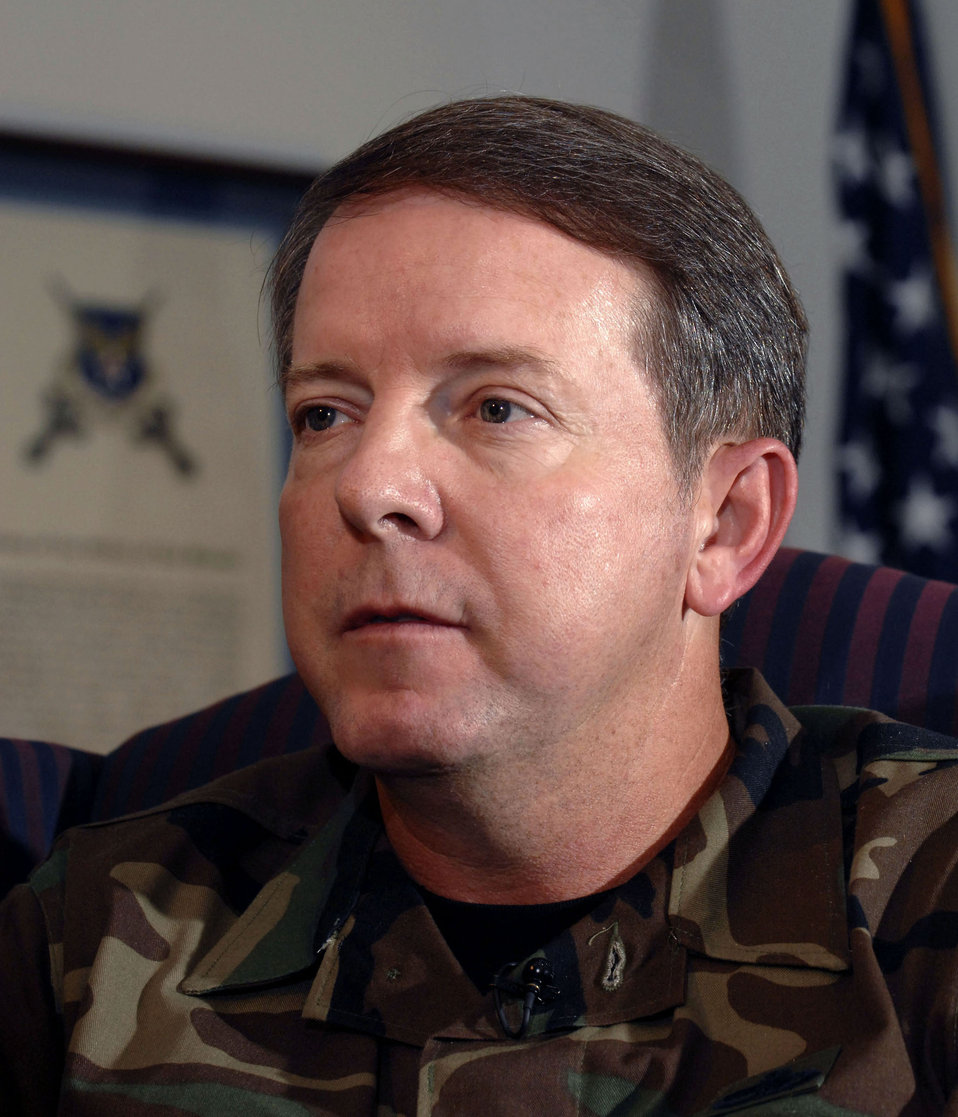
Chief's View highlights conduct

Chief Master Sgt. of the Air Force Rodney J. McKinley reminds Airmen that they are a reflection on the service 24 hours a day, 7 days a week and serve as ambassadors for the Air Force, both on and off duty.